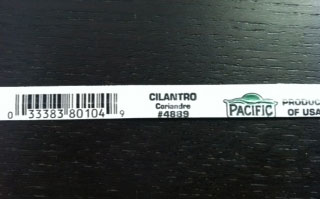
RECALLED - Cilantro

December 9, 2011 - Product Recall - Pacific International Marketing Voluntary Recalls Product Because of Possible Health Risk.